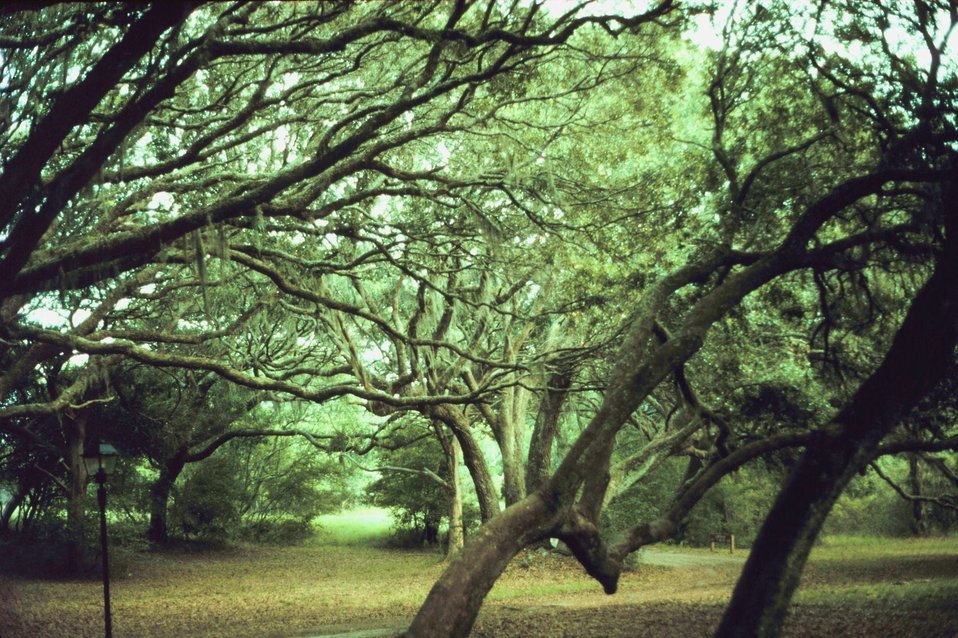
Live oaks stretch outward and upward. View from Cabretta campground.